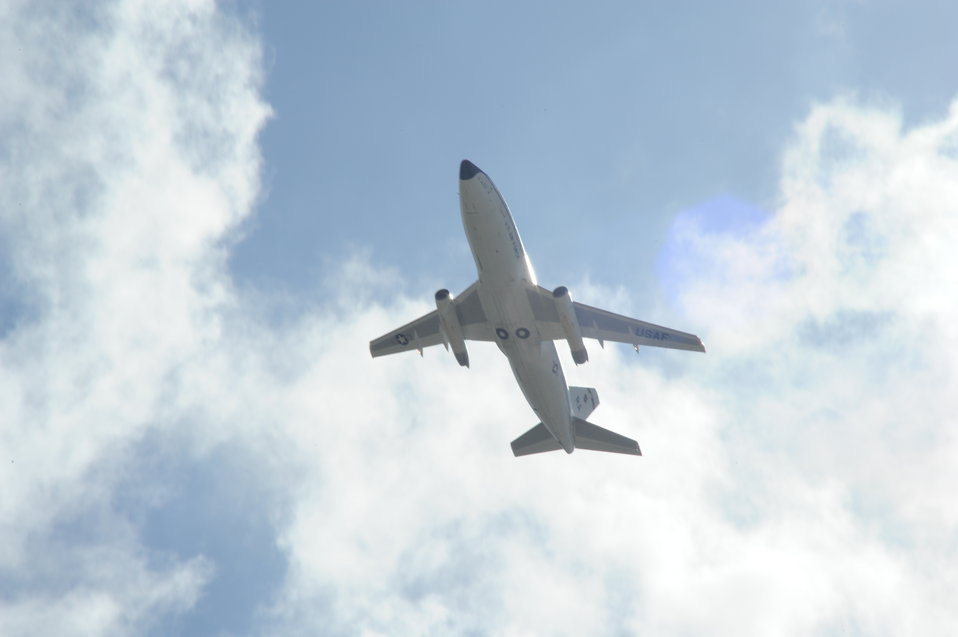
T-43 retires

The last T-43 combat systems officer trainer performs a flyby during its retirement ceremony Sept. 17, 2010, at Randolph Air Force Base, Texas. The T-43, a version of the Boeing 737, retires from the Air Force inventory after 37 years of service as a navigator training platform. The CSO training mission will be moving to Naval Air Station Pensacola, Fla.